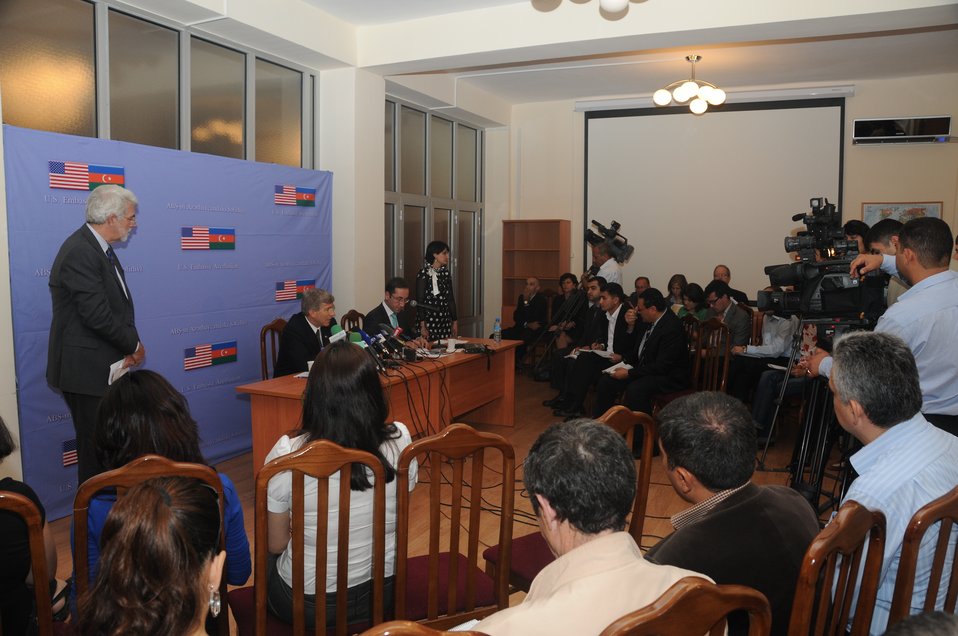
Azerbaijan Press Conf 2